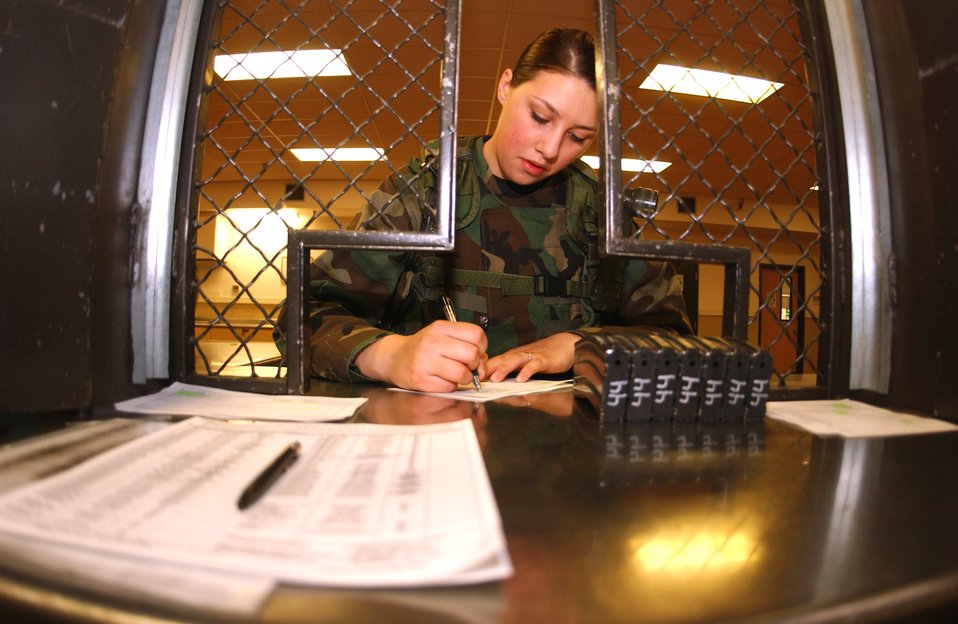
Shift change

Airman 1st Class Meagan Wells fills out a receipt for ammunition on Friday, April 21, 2006. She is a 5th Security Forces Squadron augmentee at Minot Air Force Base, N.D. When not an augmentee, Airman Wells works in plans and scheduling at the 5th Aircraft Maintenance Squadron.